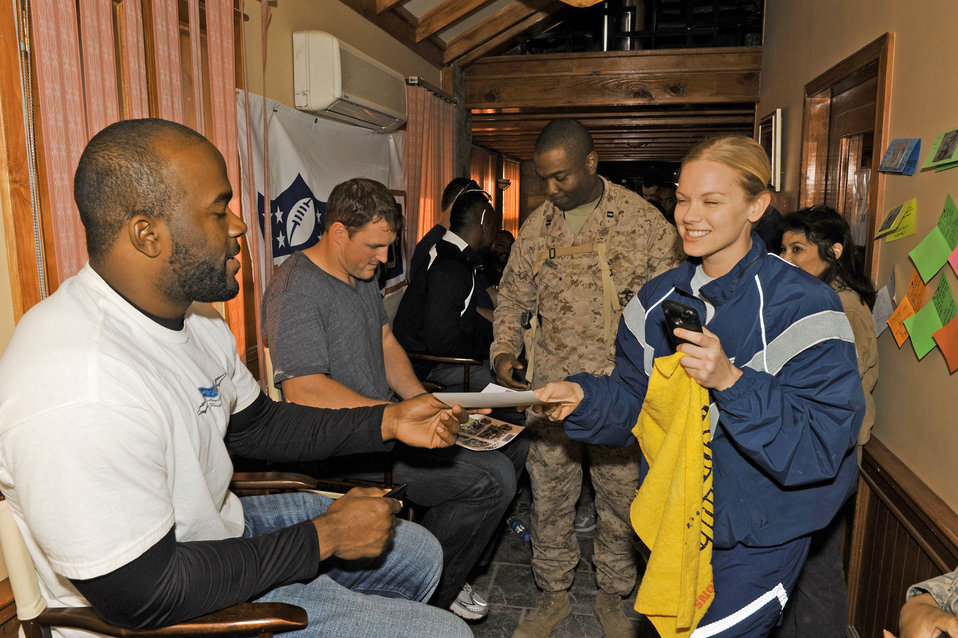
NFL players visit Bagram Airmen

Mario Williams of the Houston Texans hands an autograph to Tech. Sgt. Kimberly Price during an autograph session March 5, 2010, at the Pat Tillman USO at Bagram Airfield, Afghanistan. Sergeant Price is assigned to the 455th Aeromedical Evacuation Squadron.